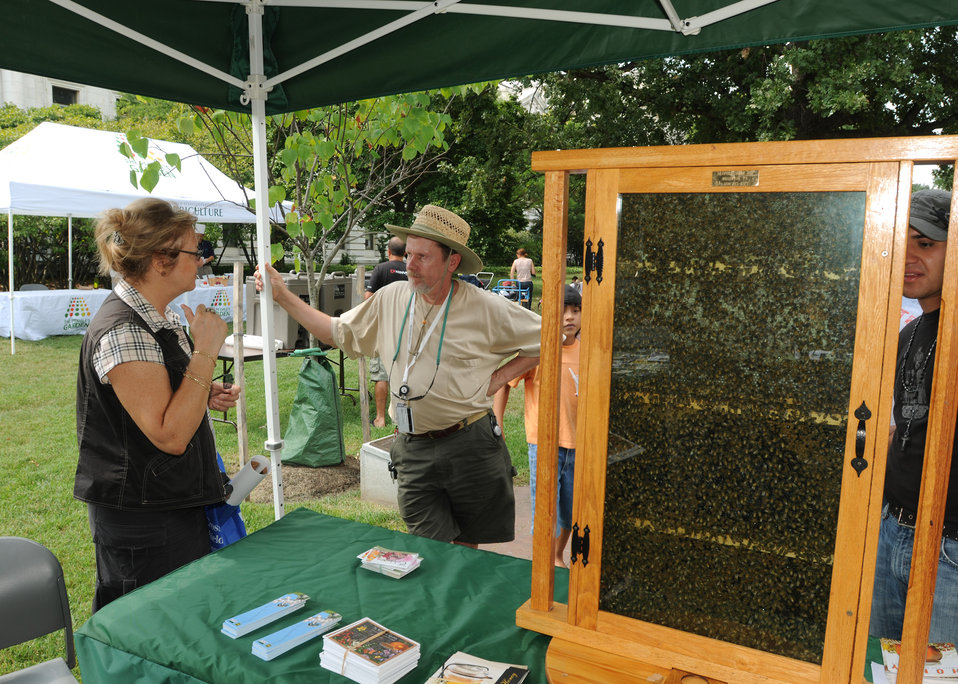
USDA employee volunteers in the People's Garden by discussing pollinators during a Healthy Garden Workshop.